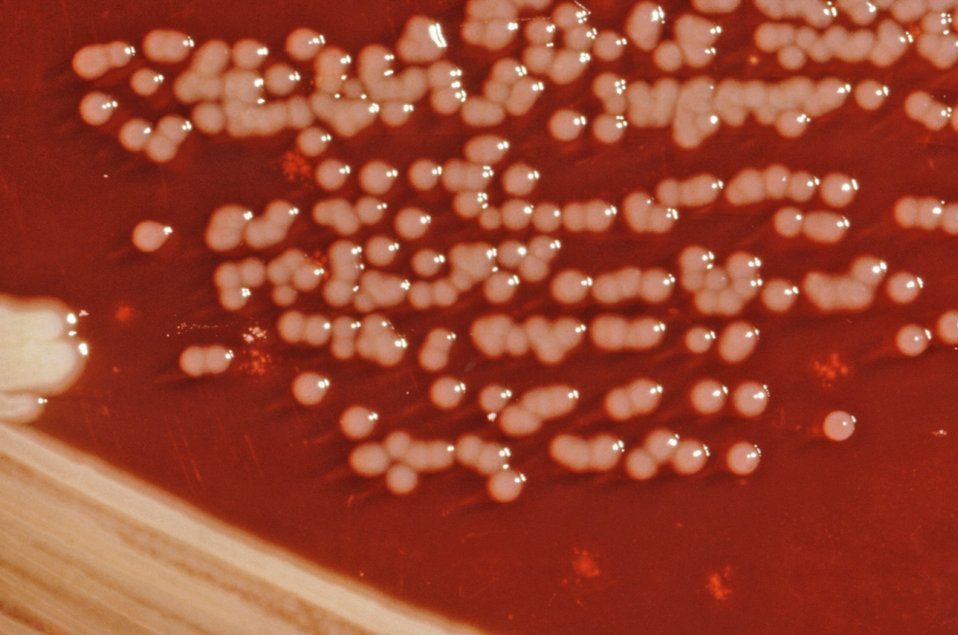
This photograph depicts the colonial growth pattern displayed by Yersinia enterocolitica bacteria growing on a Xylose Lysine Sodium Deoxycholate (XLD) agar plate.